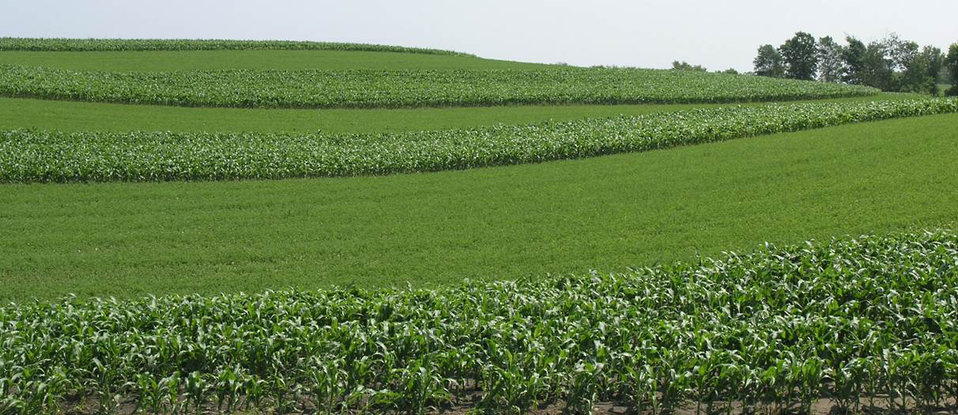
Protected

These two farms have the same soils, same crops and same precipitation. The difference is that one farm uses many conservation practices that help improve soil health helping it thrive through extreme weather conditions.